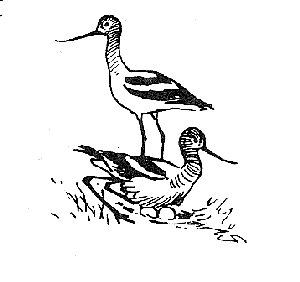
Illustration of avocets.